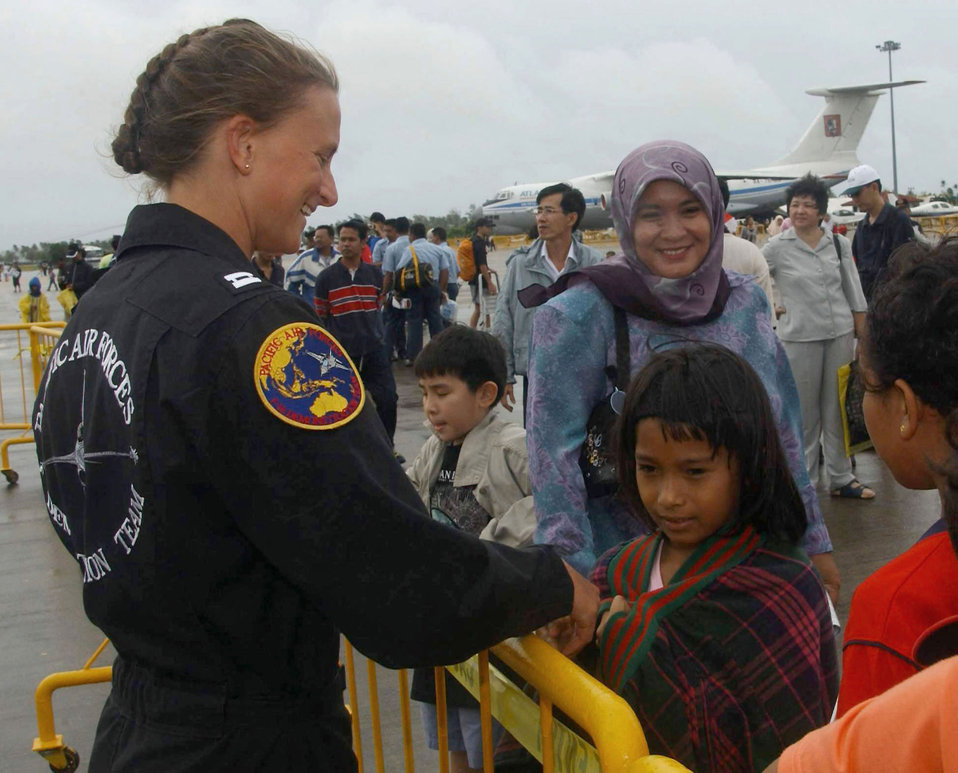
LIMA 03

LANGKAWI, Malaysia - Capt. Donna Kohout shakes hands with a Malaysian girl during the International Maritime and Aerospace 2003 exhibition here. Kohout flies the F-16 Fighting Falcon with the Pacific Air Force Demonstration Team at Misawa Air Base, Japan. LIMA is one of the premier defense trade shows in the world and this year featured defense-related technology from more than 800 companies in some 40 nations.